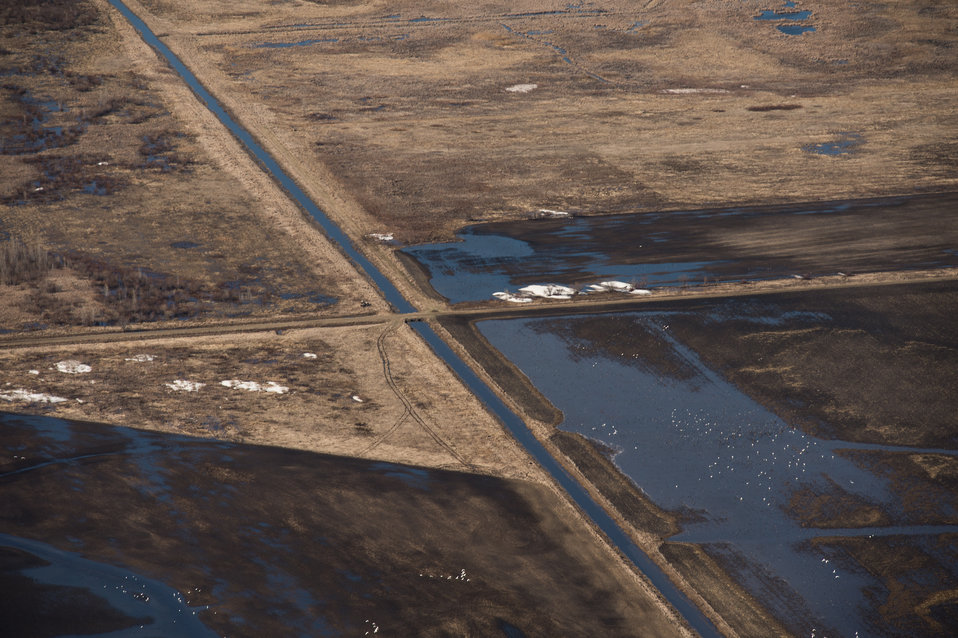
White migratory birds fly in formation over, and find refuge on and around collections of surface snow melt water near the Ehlert U.S. Department of Agriculture (USDA) Natural Resources Conservation Service (NRCS) Wetland Reserve Program (WRP) in Wilkin County, MN, on Tuesday, April 30, 2013. For information about this and other programs from the USDA Red River Basin Initiative (RRBI) please see www.mn.nrcs.usda.gov/news/features13/RRBI.html.